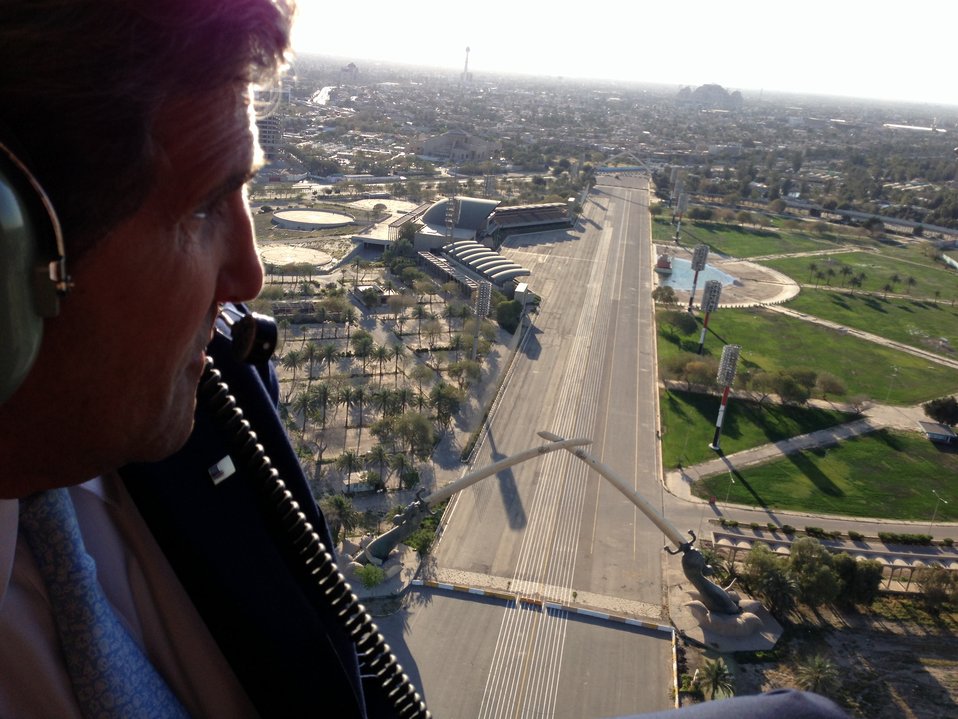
Secretary Kerry Flies Over Baghdad

U.S. Secretary of State John Kerry flies over the Arch of Triumph in Baghdad, Iraq during his visit on March 24, 2013.